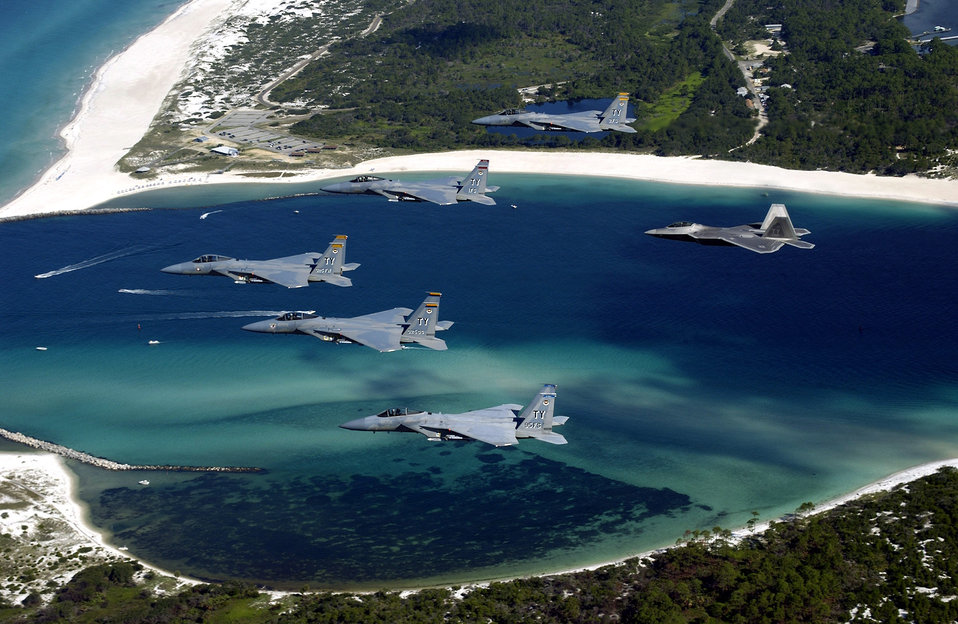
Cruisin' Florida

OVER FLORIDA -- A formation of 325th Fighter Wing F-15 Eagles and an F/A-22 Raptor fly above Panama City, Fla. The Raptor will eventually replace the F-15 Eagle in the Air Force inventory.